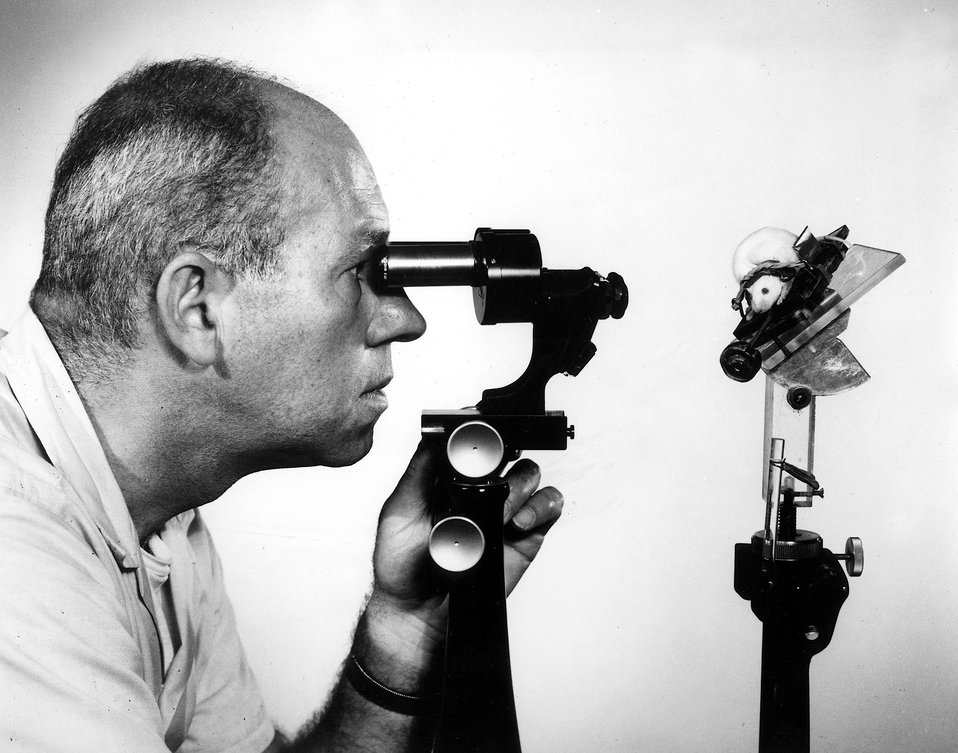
CATARACT STUDY...At Brookhaven National Laboratory, the induction of
specification (pre-cataracts) by radiation in the lens of the mouse eye is being used to study the relative biological effectiveness (RBE) of penetrating ionizing radiation as a function of type and dose.